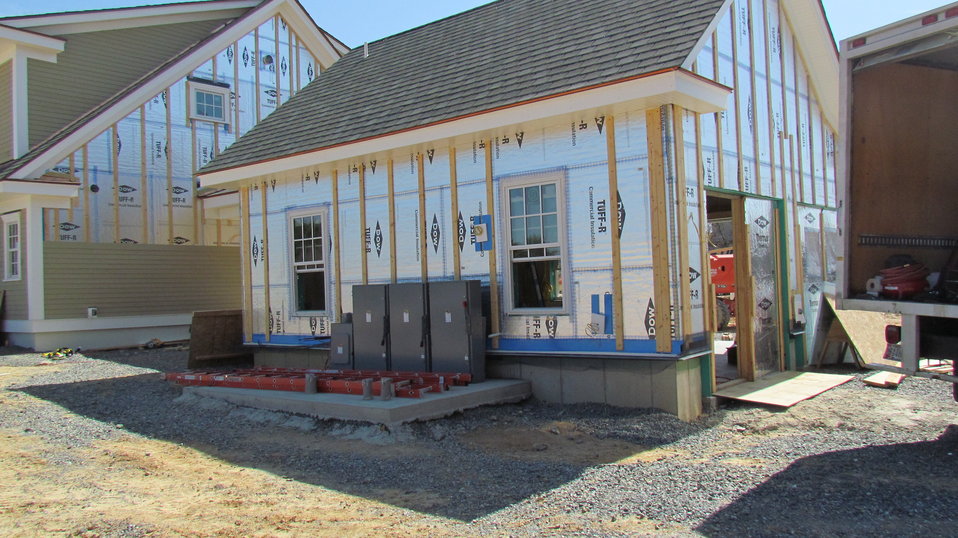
Switchgear installed behind garage of facility. Part of the system used to interface/convert the three phase power that was available near the site to conversational single-phase 240 volt power typically used in residential structures.